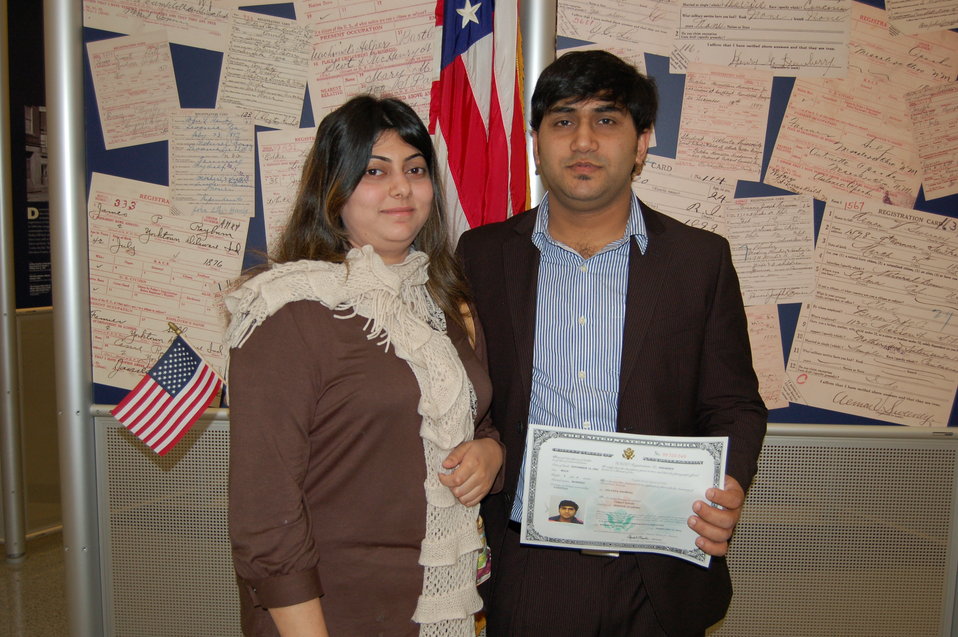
New Citizens